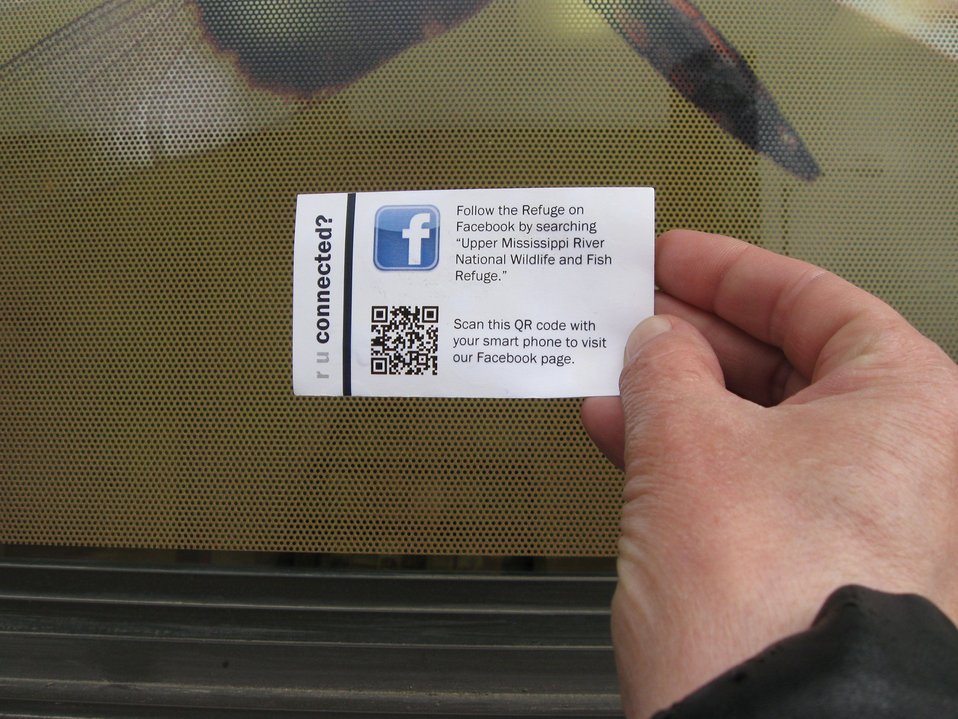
Upper Miss QRcode 2

A QR code printed on the back of a business card at Upper Mississippi River National Wildlife and Fish Refuge takes users to the refuge’s Facebook page. (Cindy Samples)